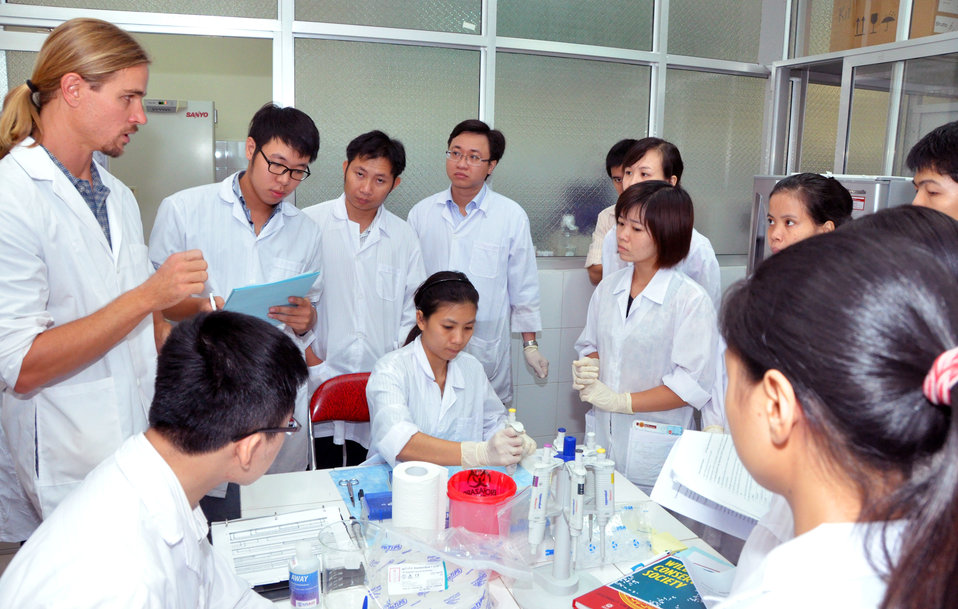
Animal virus detection lab training in Hanoi

Trainee learns how to detect viruses in Hanoi under a USAID program.